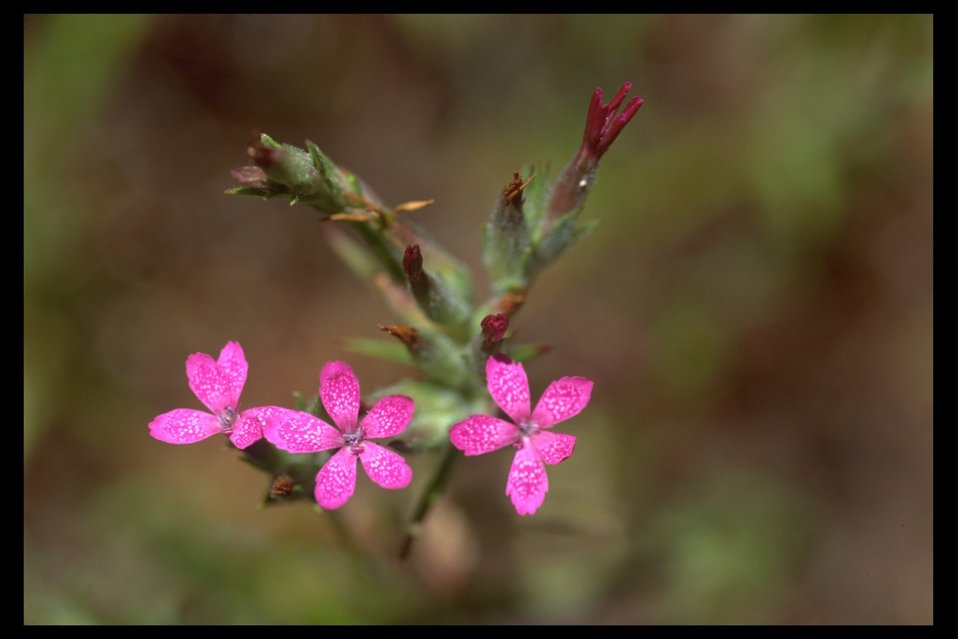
Grass Pink, also called Deptford Pink, (Dianthus armeria ssp. armeria) along Upper Trail Creek.